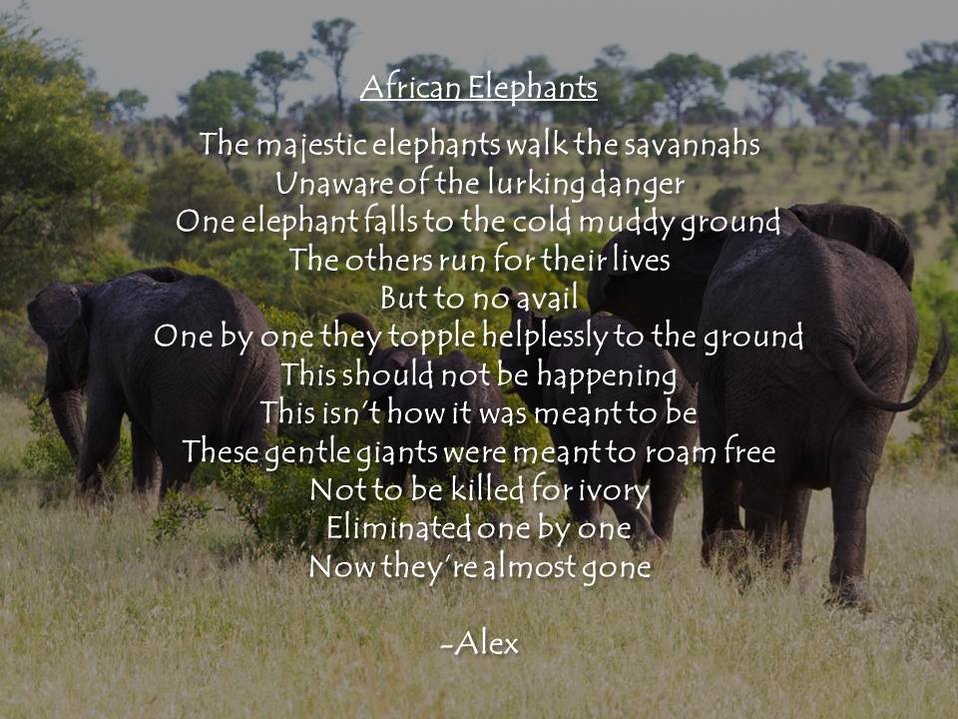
Poem by Alex